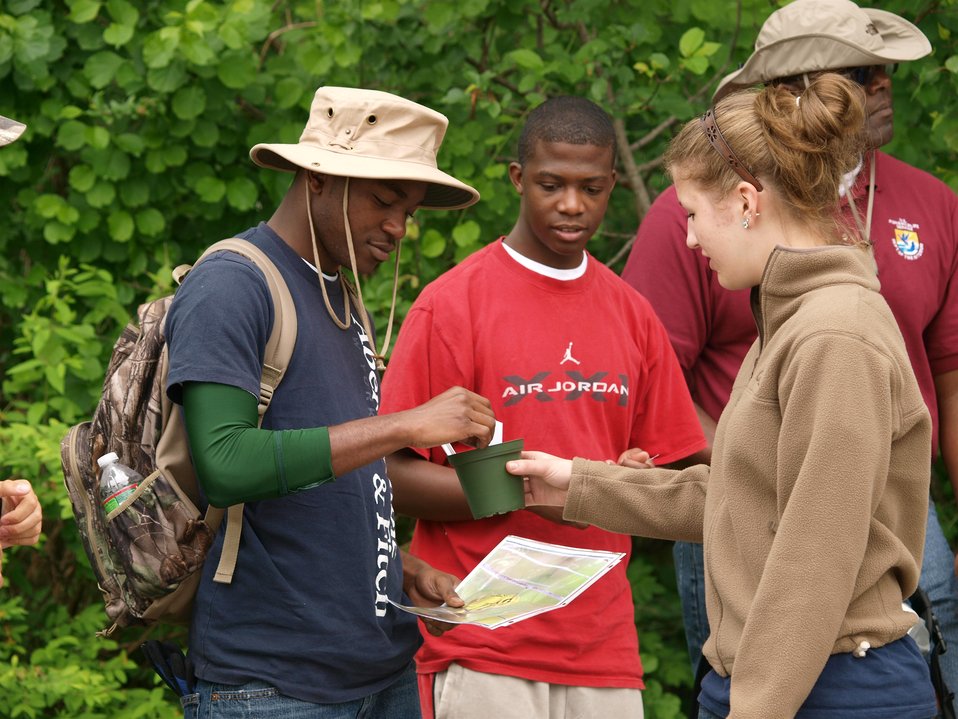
Rachel Carson Natl Wildlife Refuge, ME